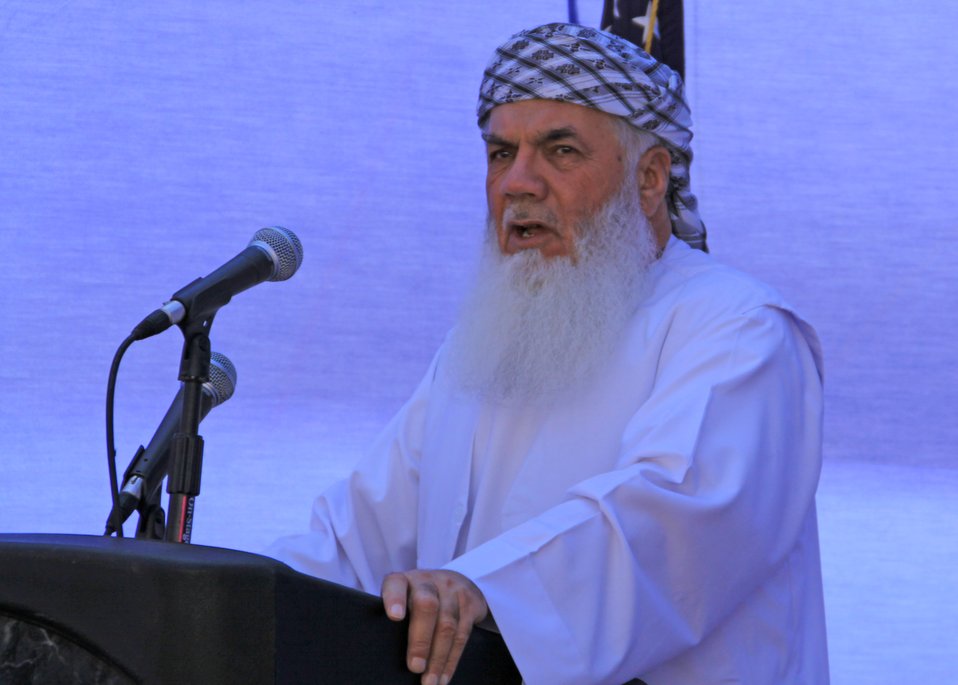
105 MW Tarakhil Power Plant Handover